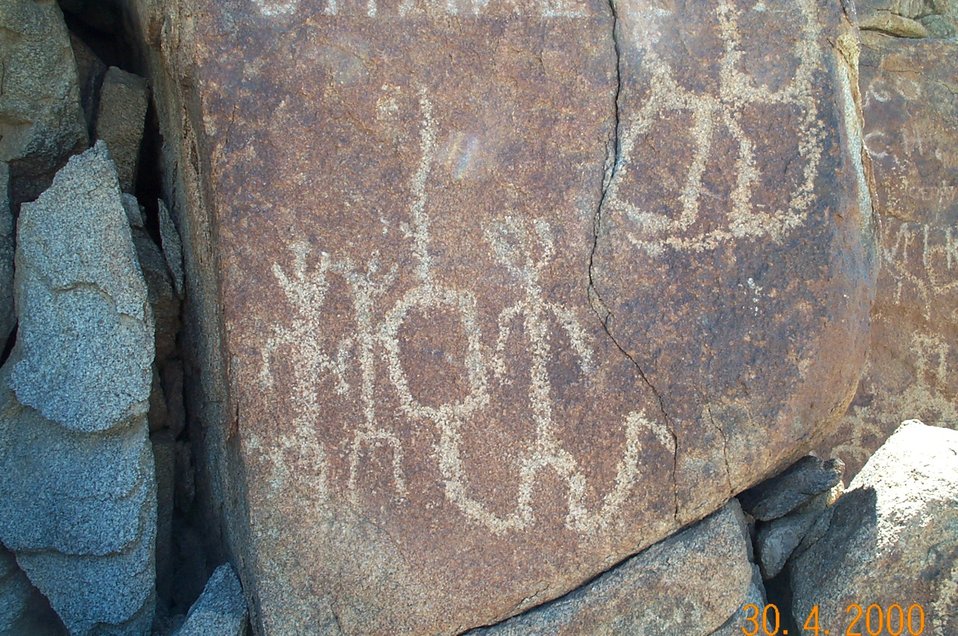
Rock art